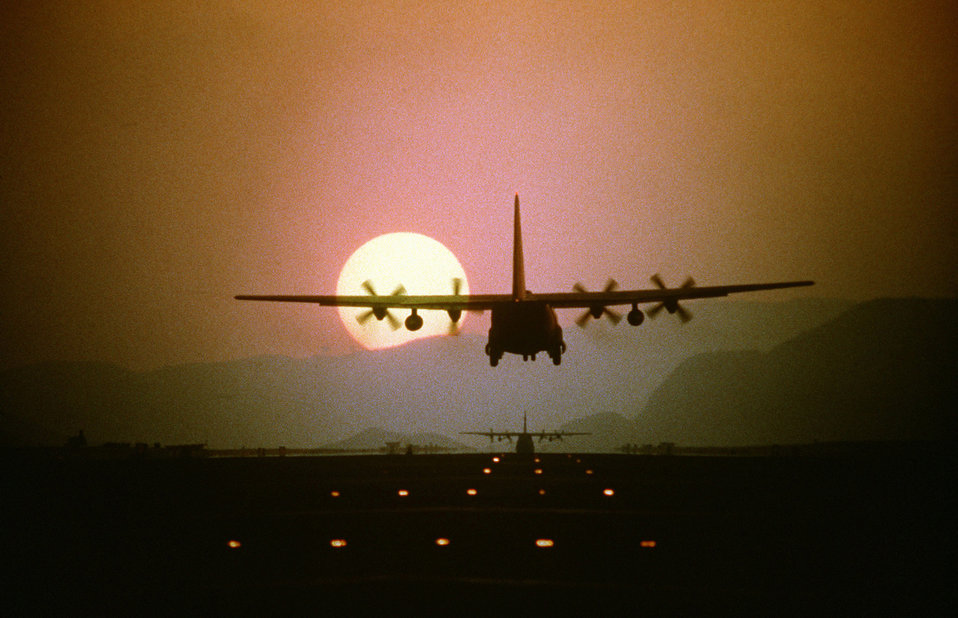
Sun sets on Hercules

CLARK AIR BASE, Phillippines -- Silhouetted by the setting sun, a C-130 Hercules aircraft prepares to land during a 10-ship air drop exercise being conducted by the 21st Tactical Airlift Squadron, 374th Tactical Airlift Wing.